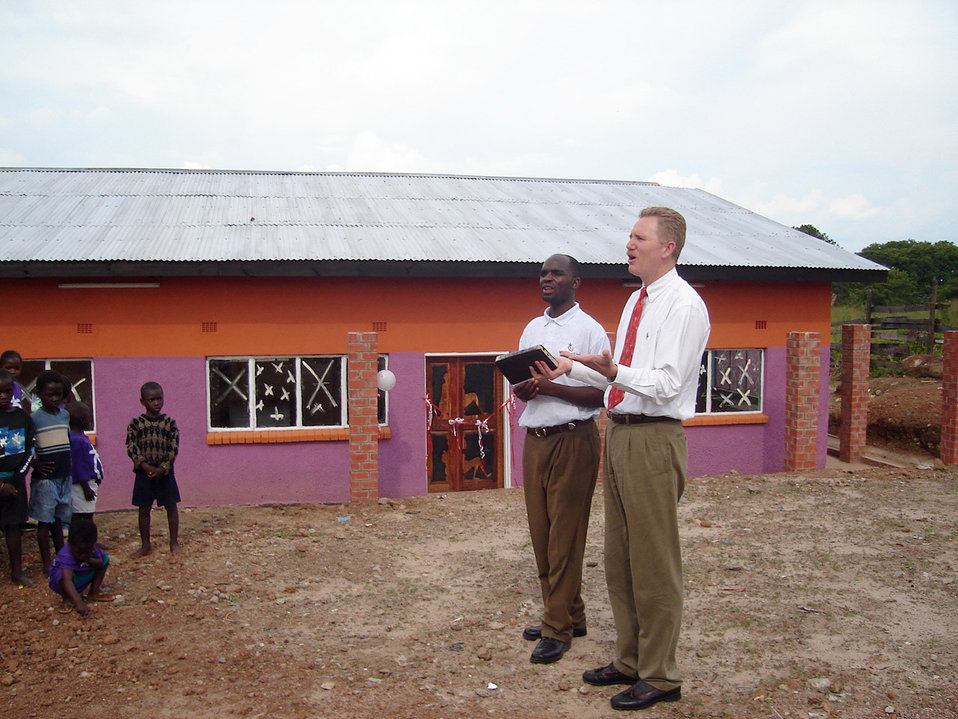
Humanitarian in action

ZAMBIA (AFPN) -- Lt. Col. (Dr.) Kirk Milhoan (right) joins Edward Mwansa, pastor and onsite orphanage director, in leading a dedication ceremony of the new AIDS orphanage Jan. 29. It took 14 months to build the facility.